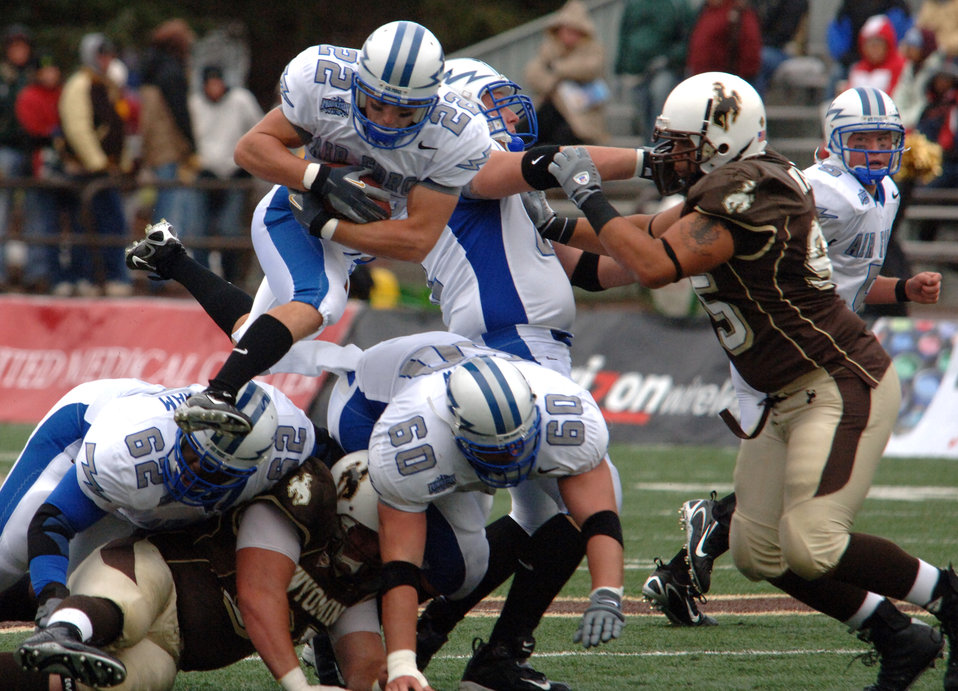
Falcons corral Cowboys in conference opener

Falcon halfback Beau Suder goes airborne for yardage over the blocks of right guard Curtis Grantham (#62) and center Stuart Perlow (#60) as left guard Tyle Dohallow fends off Wyoming defensive tackle Corey Mace. The four Air Force senior starters combined for a first down on this play. Air Force improved its record to 1-1 with a 31-24 win over Wyoming.